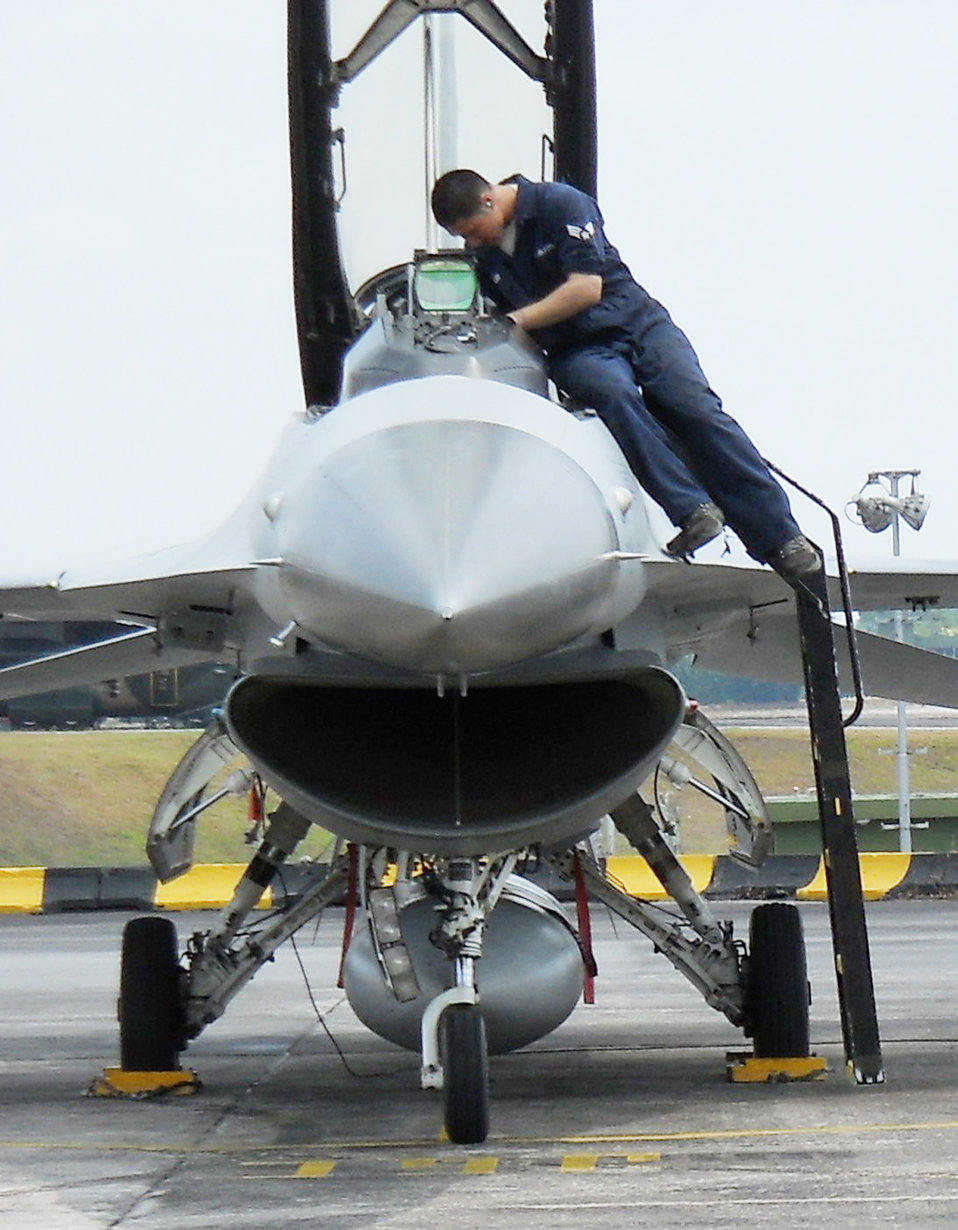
Everything checks

Senior Airman Dennis Lee, a 51st Aircraft Maintenance Squadron crew chief, prepares the cockpit of an F-16 Fighting Falcon before a flight during exercise Commando Sling 10 at Paya Lebar Air Base, Singapore. The second part of exercise Commando Sling 10, which began Feb. 22, involves air forces from the U.S. and the Republic of Singapore.